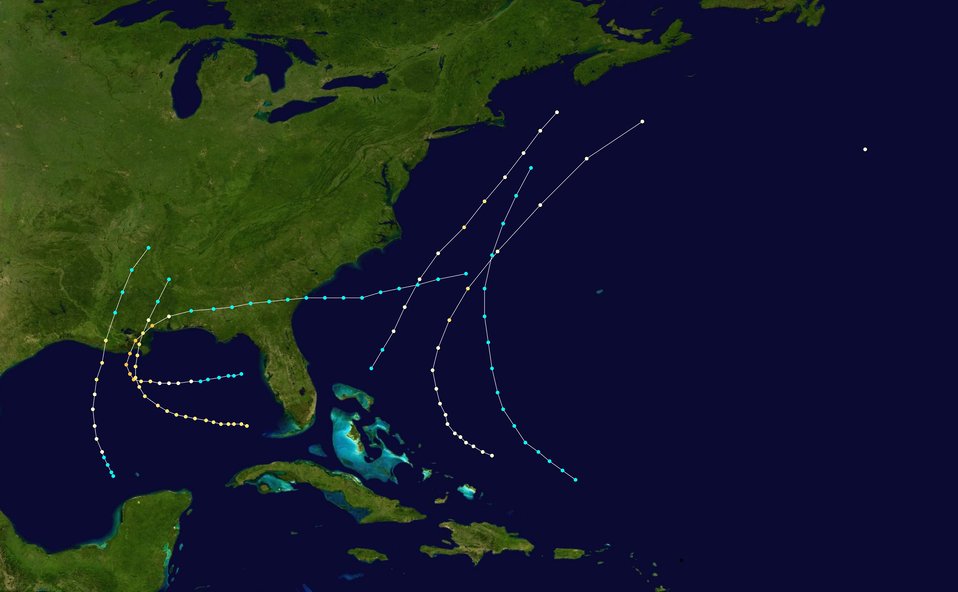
1860 Atlantic hurricane season summary